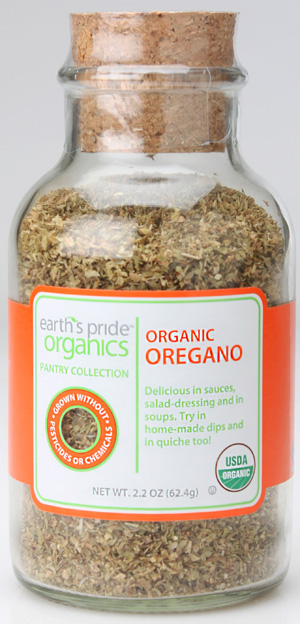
RECALLED - Organic Oregano

July 12, 2013 - Product Recall - Olde Thompson Inc. Issues a Voluntary Recall of Earth’s Pride Organics: Organic Oregano 2.2 Oz Glass Jars With Cork Closure Due to Possible Salmonella Risk.